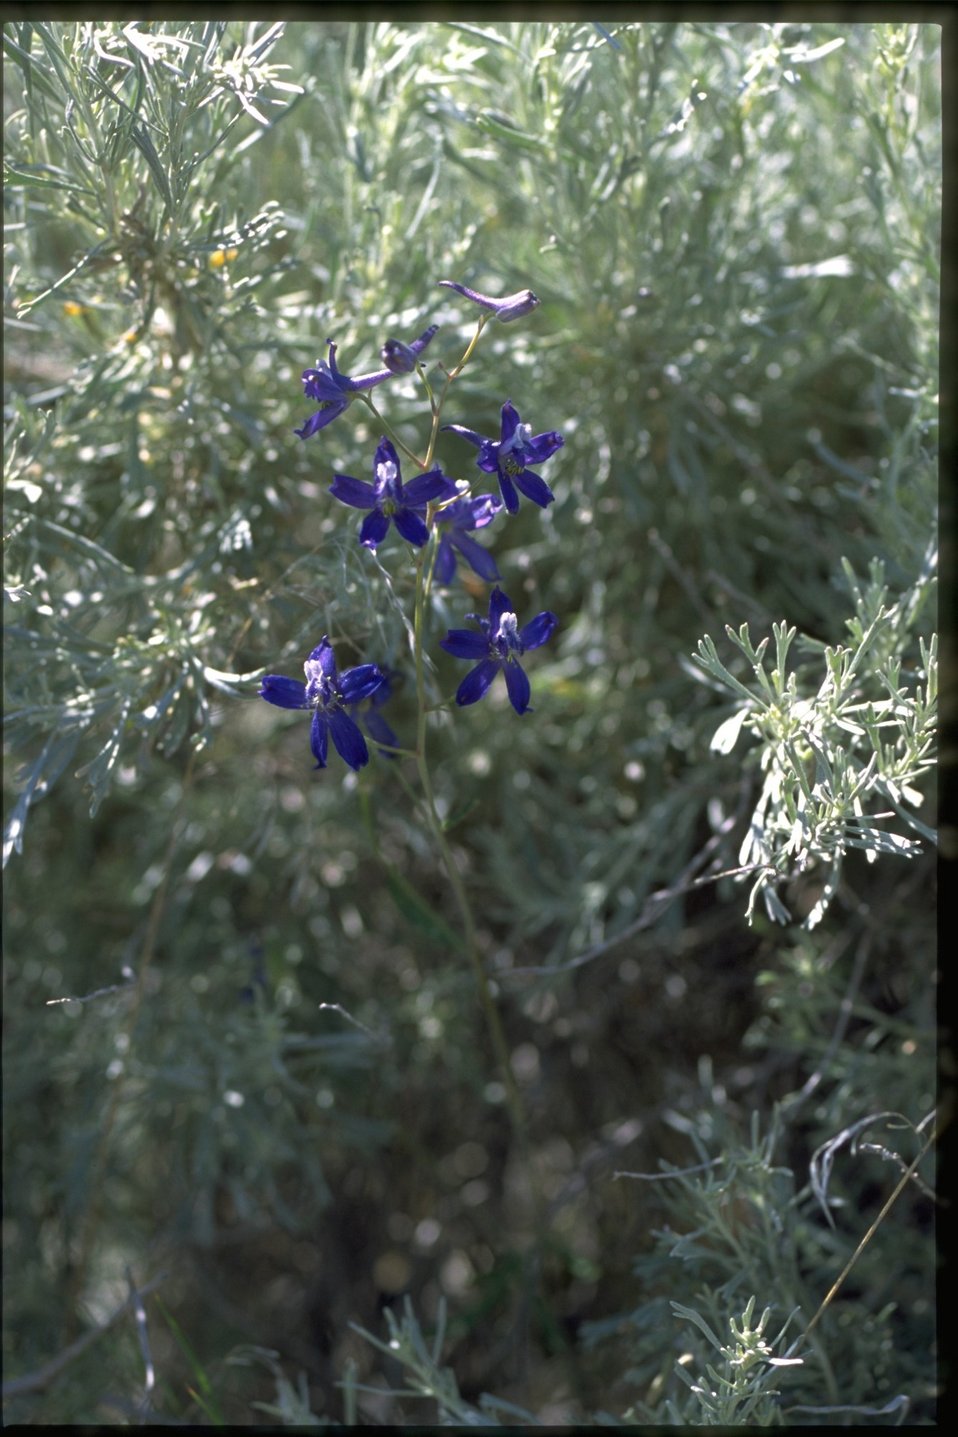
Farshot of Delphinium.